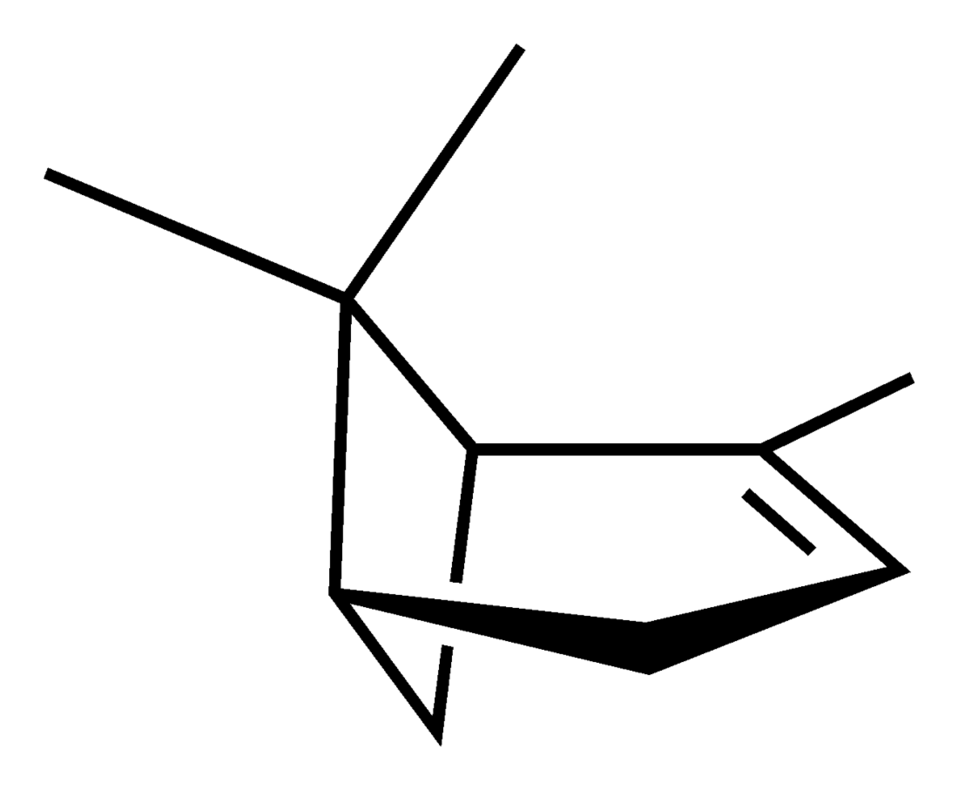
Skeletal formula of (−)-α-pinene